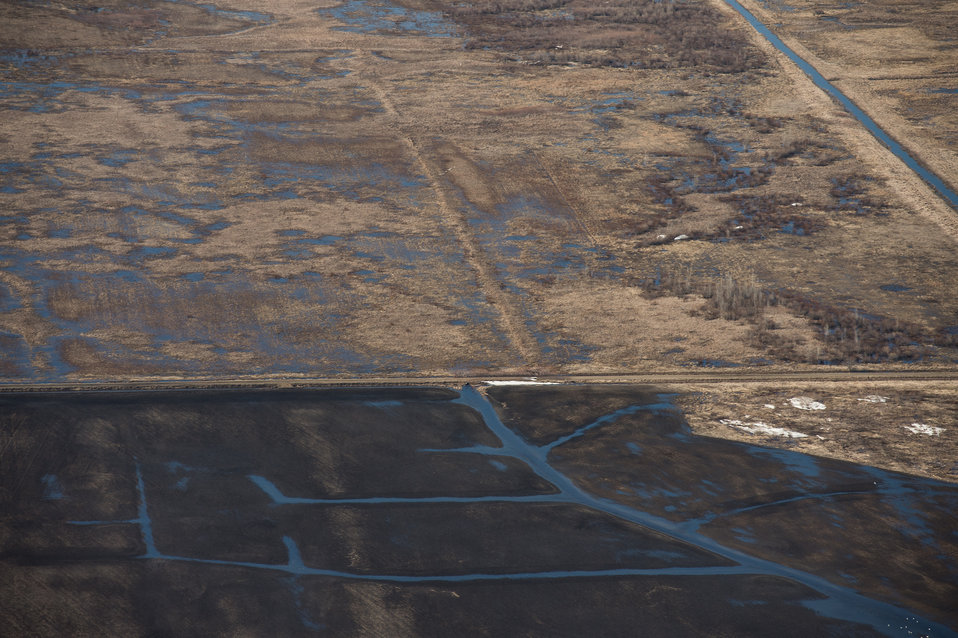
Ehlert U.S. Department of Agriculture (USDA) Natural Resources Conservation Service (NRCS) Wetland Reserve Program (WRP) in Wilkin County, MN, on Tuesday, April 30, 2013. For information about this and other programs from the USDA Red River Basin Initiative (RRBI) please see www.mn.nrcs.usda.gov/news/features13/RRBI.html.